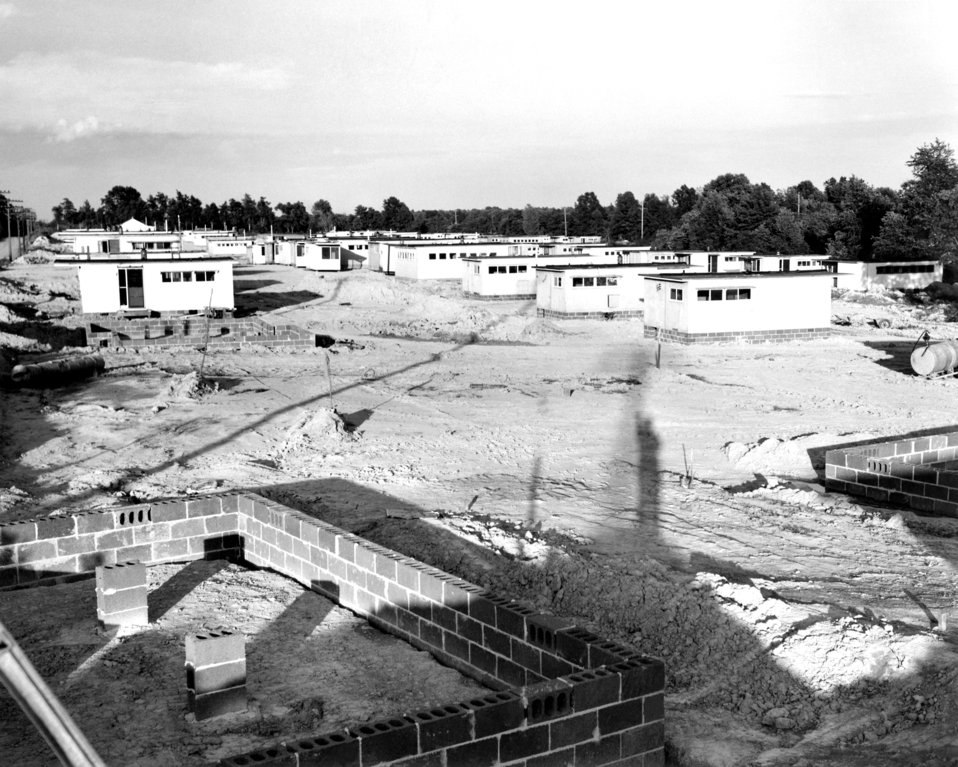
General View of Erection of Pre-Fabs 1951

6880 DOE photo Ed Westcott 6-18-1951 Kentucky Area